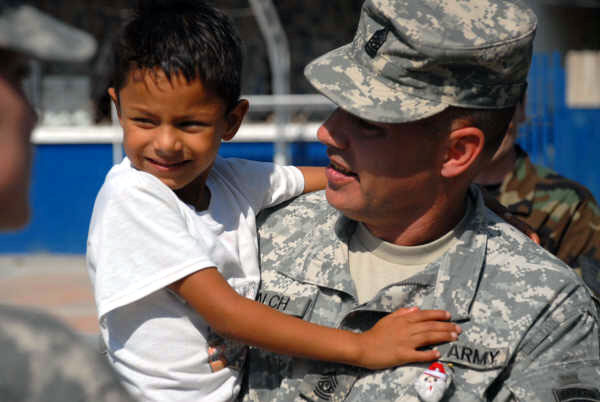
Commander brings holiday cheer to Ecuadorian schools

Army Command Sgt. Maj. Michael Balch talks with a student of the Angelica Flores School for the Disabled in Manta, Ecuador. Sergeant Major Balch was part of a group of U.S. Southern Command members led by Lt. Gen. Glen Spears who were there to pledge money for repairs and supplies for the school. The group was accompanied by Airman from the Forward Operating Location within the Ecuadoarian Eloy Alfaro air force base in Manta.